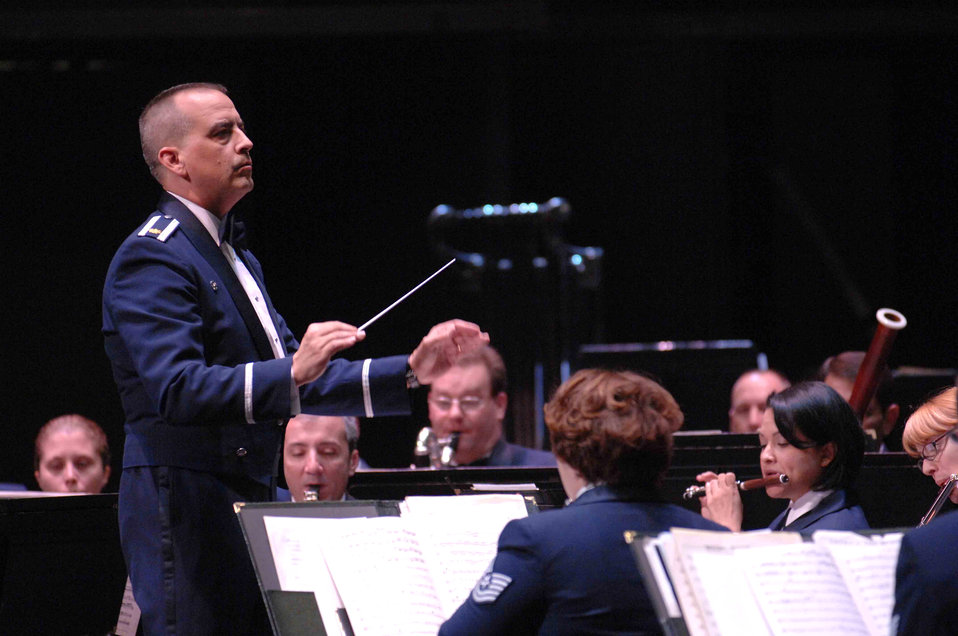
Music to their ears

Maj. Richard Mench conducts the musical piece